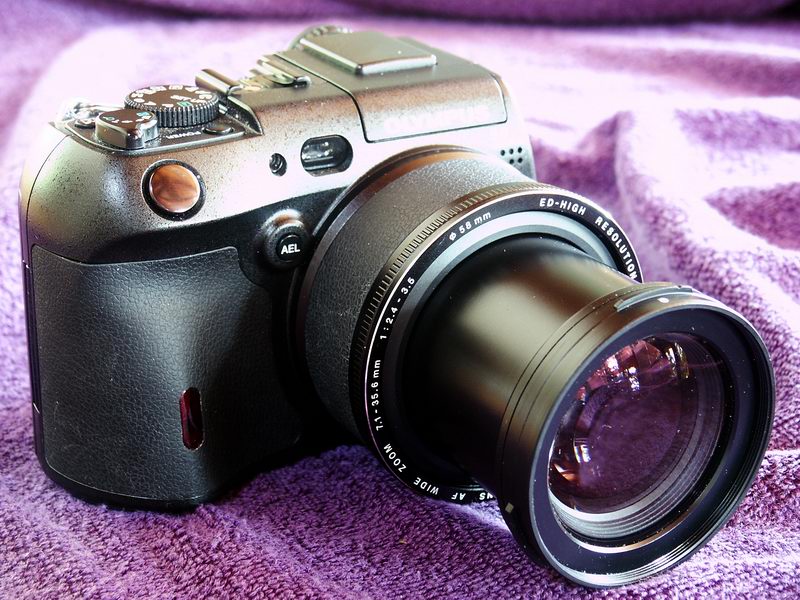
DANYvanvee